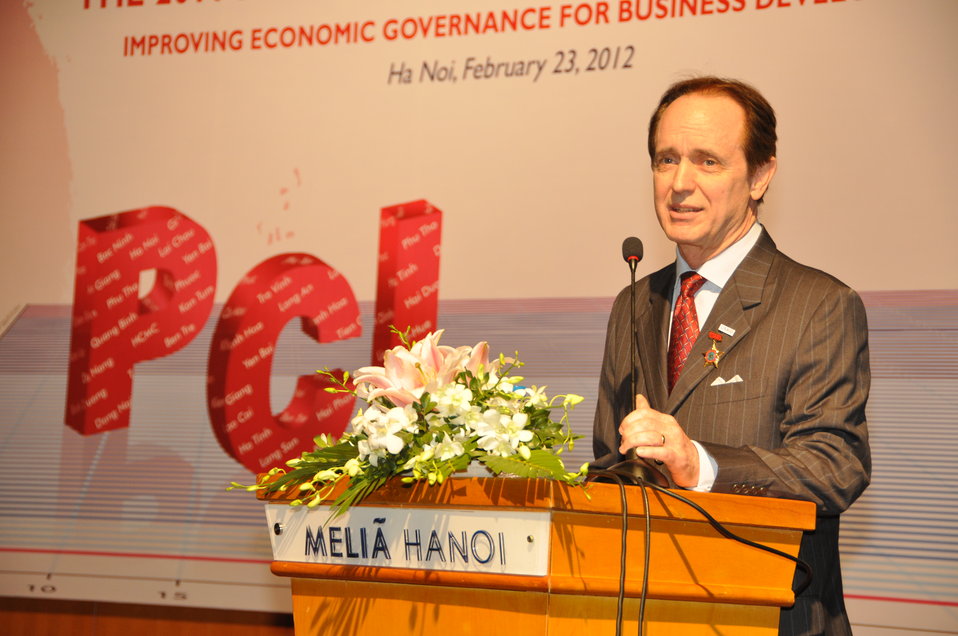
USAID Mission Director Francis Donovan at the Provincial Competitiveness Index 2011 Launch